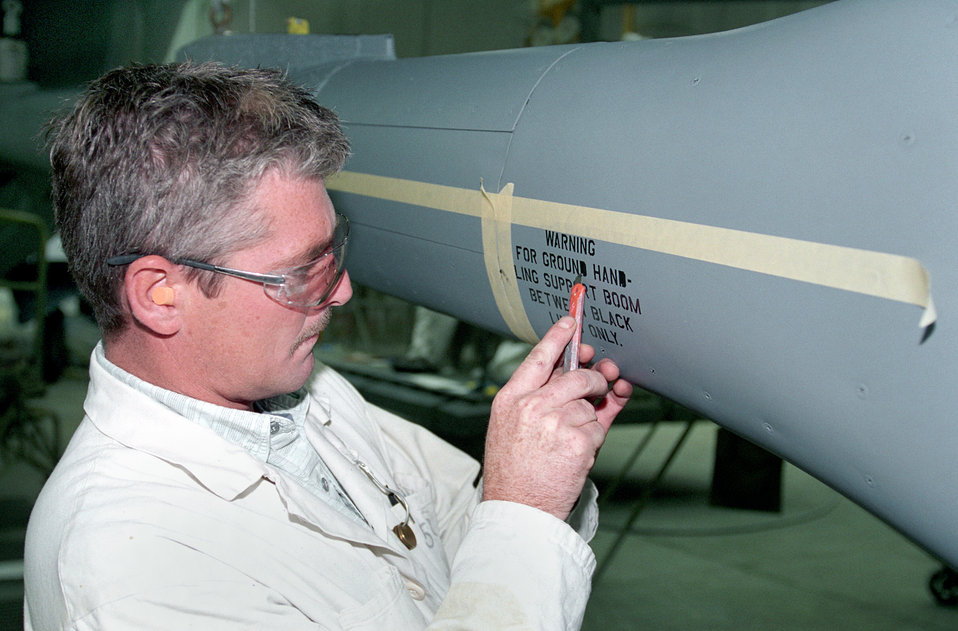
Painters produce picture-perfect planes

TINKER AIR FORCE BASE, Okla. -- Painter Steve Hamilton finishes stenciling on a KC-135 Stratotanker boom.